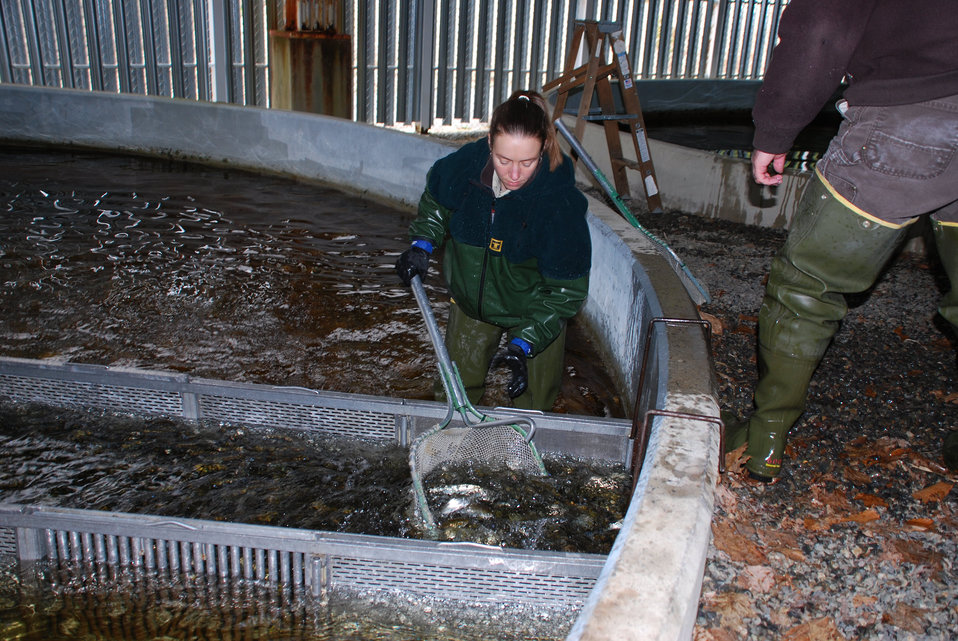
Netting Atlantic Salmon

Green Lake National Fish Hatchery Manager Anitra Firmentich nets Atlantic salmon smolts.